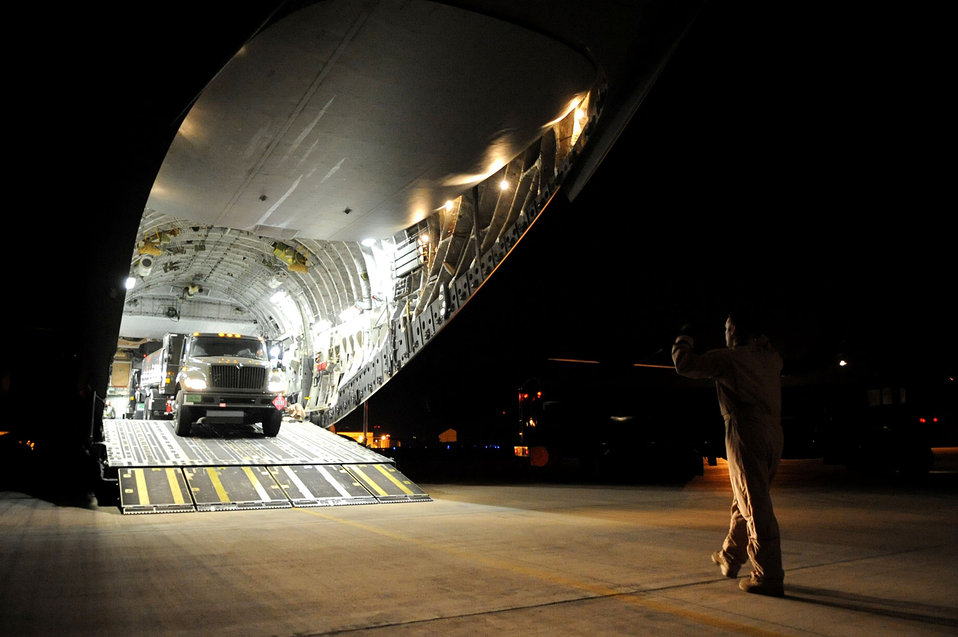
Refueling trucks

Loadmasters prepare to unload a refueling truck from a C-17 Globemaster III March 23, 2011, at Aviano Air Base, Italy, in support of Operation Odyssey Dawn.